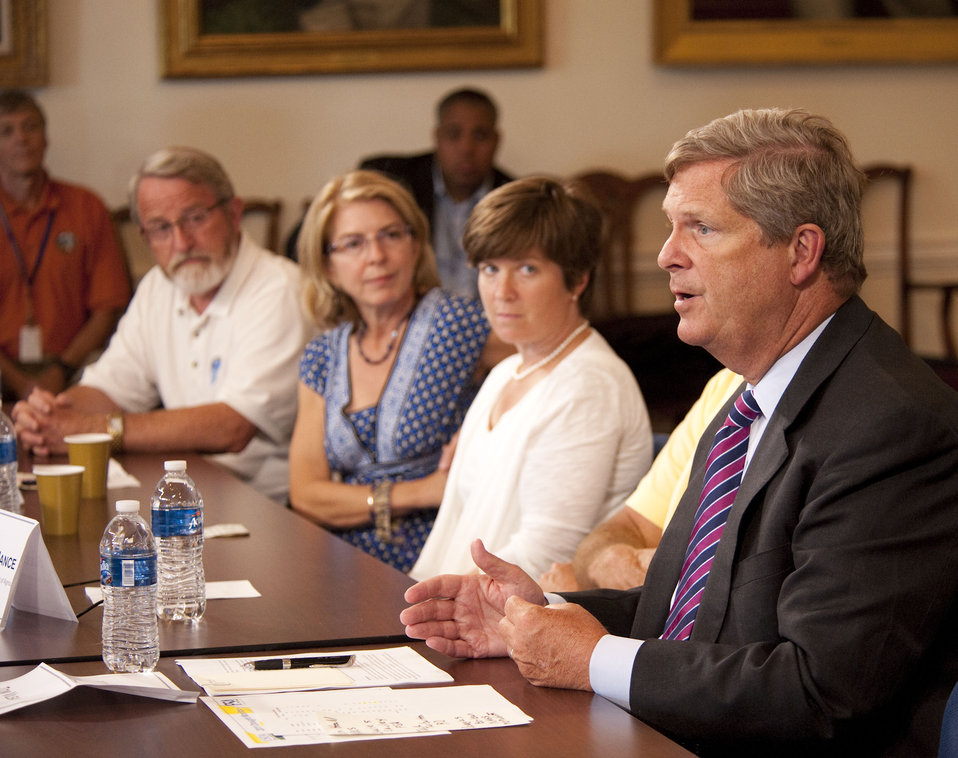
Agriculture Secretary Tom Vilsack meeting with Maryland Agricultural Leaders for a round table discussion in Annapolis, MD, on Thursday, July 21, 2011.